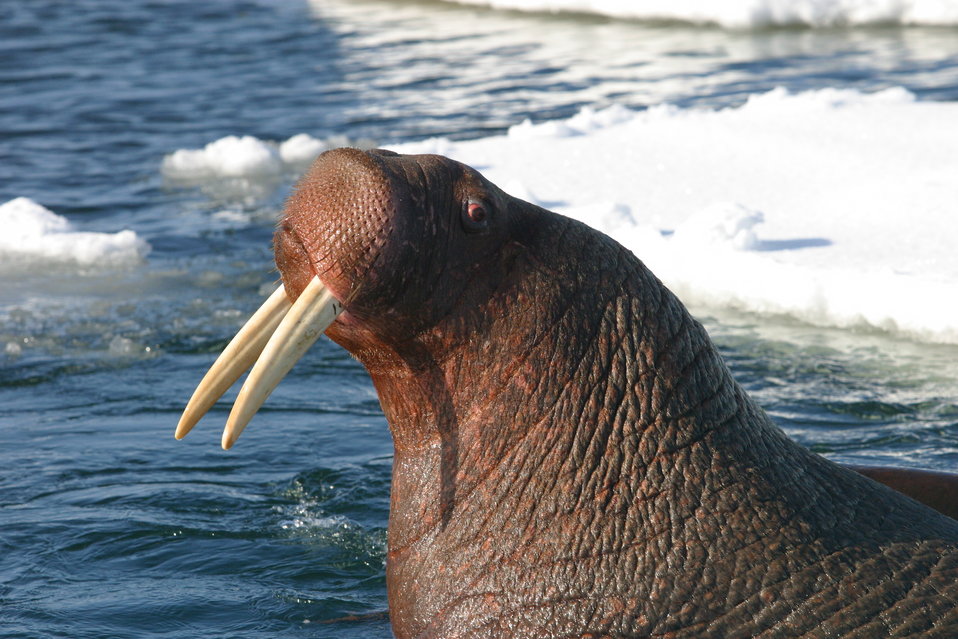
Pacific Walrus Bull Hauled Out

A Pacific Walrus bull is hauled out on the ice in coastal Alaska waters.